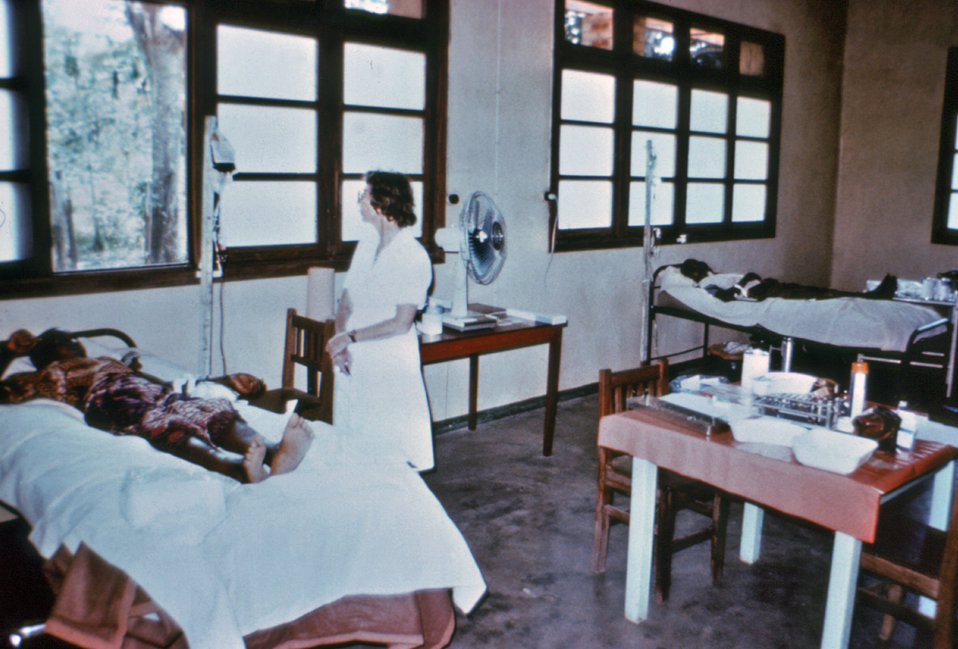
This photograph showed Dr. Margaret Isaacson as she was tending to the needs of an Ebola patient in a Yambuku, Zaire hospital theatre block that was used as a temporary ICU for Ebola patients during the country's 1976 outbreak.